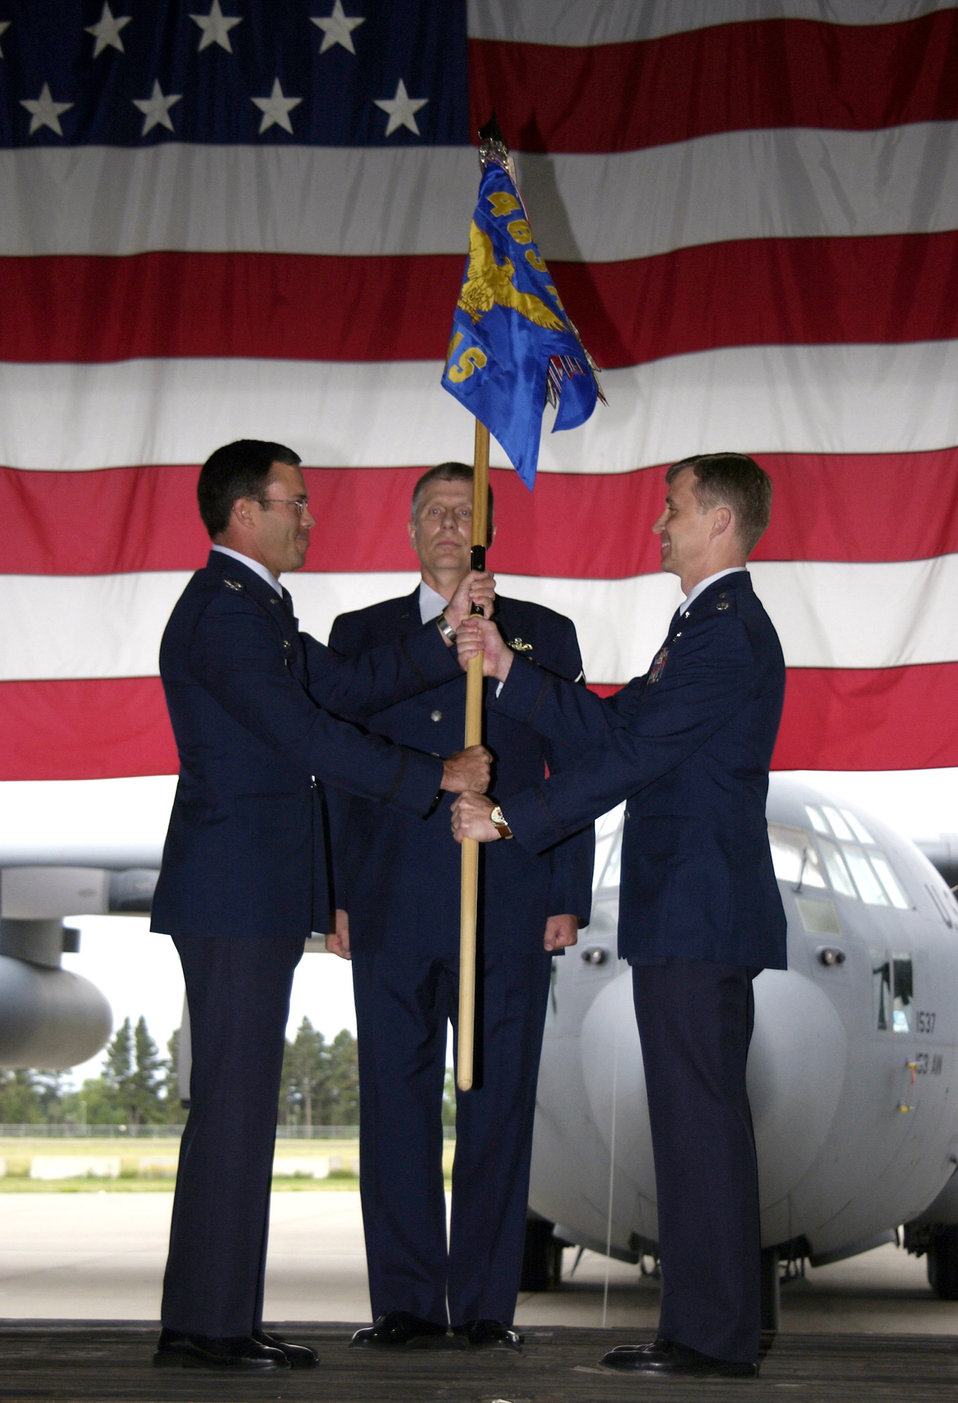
Active duty associate squadron a first for Air Force

Col. John Gomez, left, passes the guidon to Lt. Col. Steven Hopkins while Master Sgt. Rick McKean observes during the 30th Airlift Squadron reactivation ceremony July 8 at the Wyoming Air National Guard base in Cheyenne. The 30th AS is the first active duty air mobility squadron to report to an Air National Guard wing. Colonel Gomez is the 463rd Airlift Group commander from Little Rock Air Force Base, Ark. Sergeant McKean is also from the 463rd. Colonel Hopkins is the 30th AS commander.